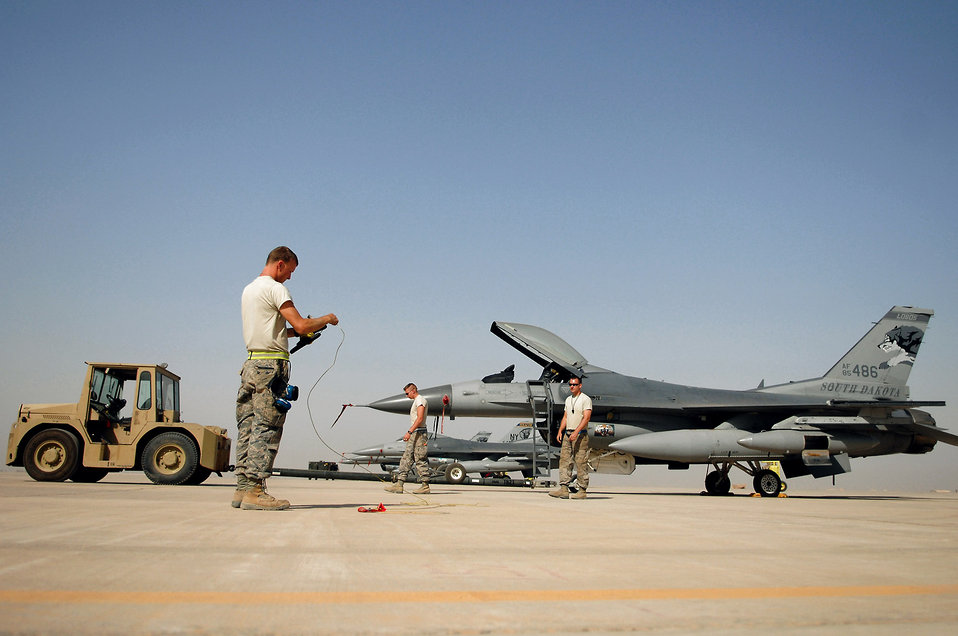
The changing of the Guard

Tech. Sgt. Jake Hermanson(left) rolls up an F-16 Fighting Falcon grounding cable June 13 before towing the jet to a hardened aircraft shelter during a transition between fighter squadrons at Balad Air Base, Iraq. Aircraft and personnel from Iowa and Wisconsin Air National Guard units will return to the U.S. after being in Iraq for four months. F-16s and Airmen from South Dakota and New York ANG units have arrived here to take their places. Rotating fighters helps reduce the amount of time the aircraft are exposed to the hot and dusty weather of Iraq, which can wreak havoc on the planes' components. Sergeant Hermanson, assigned as a 332nd Expeditionary Aircraft Maintenance Squadron crew chief, is deployed from the Iowa Air Guard.